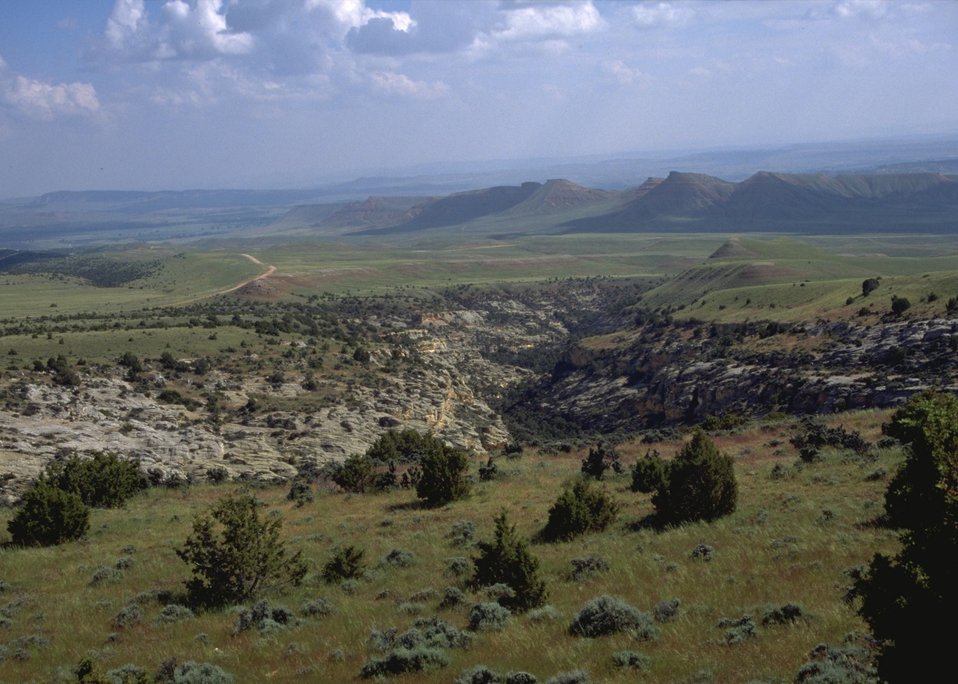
Scenic rock area.